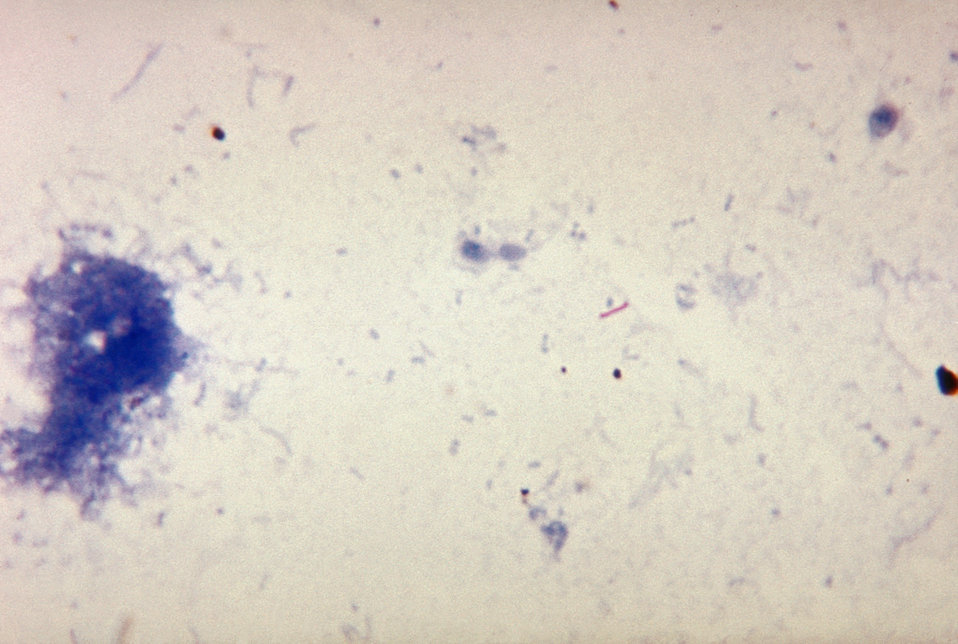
A photomicrograph of Mycobacterium tuberculosis in a sputum smear, using Ziehl-Neelsen acid-fast stain technique.